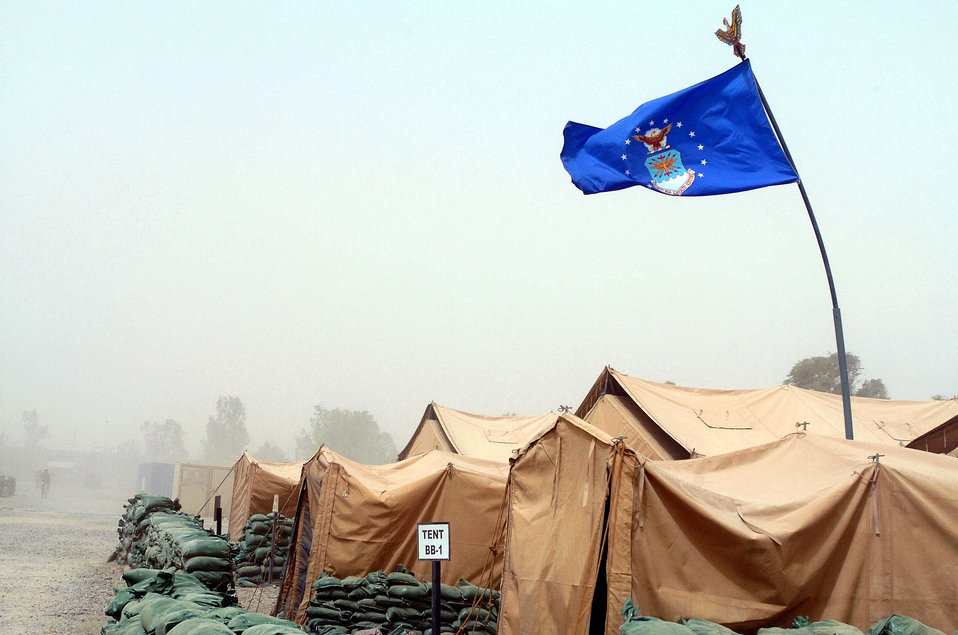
Blowing in the wind

BALAD AIR BASE, Iraq -- An Air Force flag in tent city here waves in the fierce winds of a sand storm recently. From mid-June to mid-September, base residents can experience a